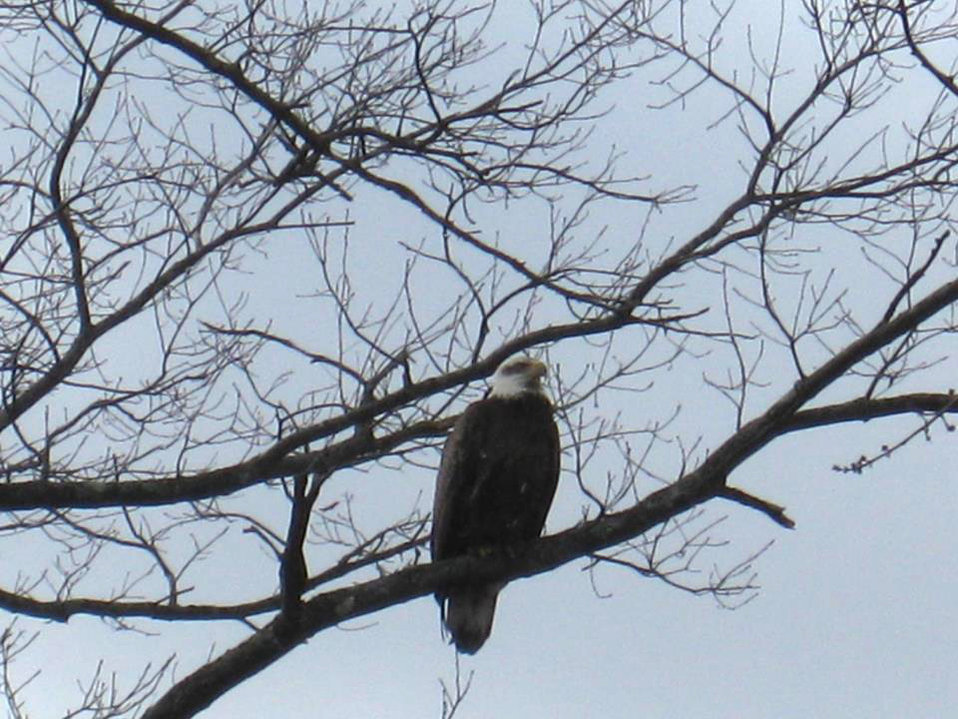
Bald Eagle photographed in West Brookfield (MA)